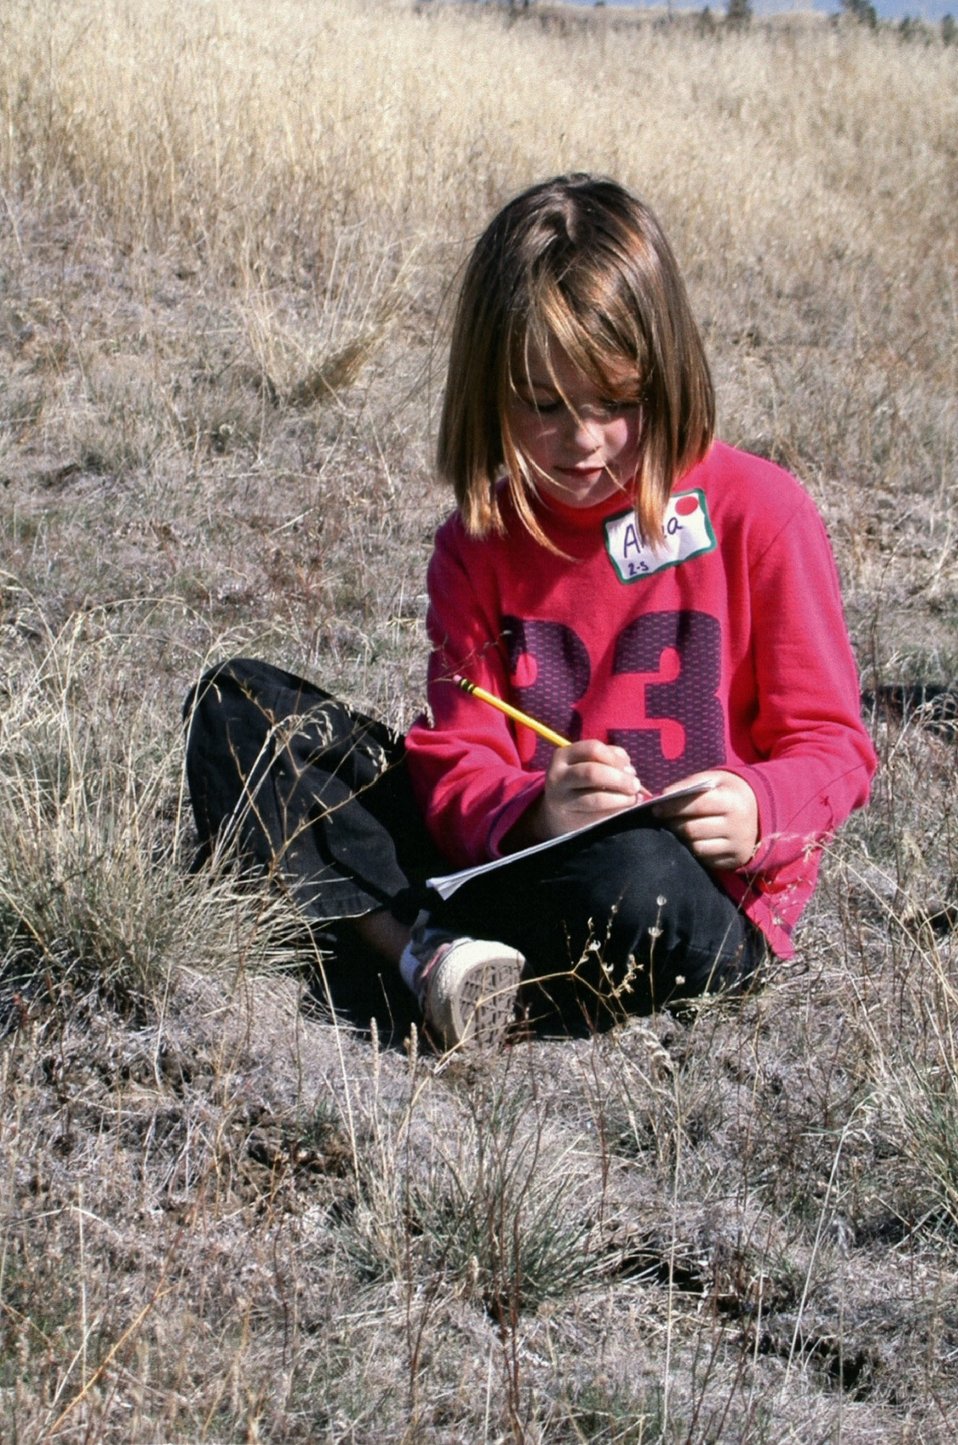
Young girl in an Environmental Education Class at Folsom Farm. Kathy Helm, Spokane People1